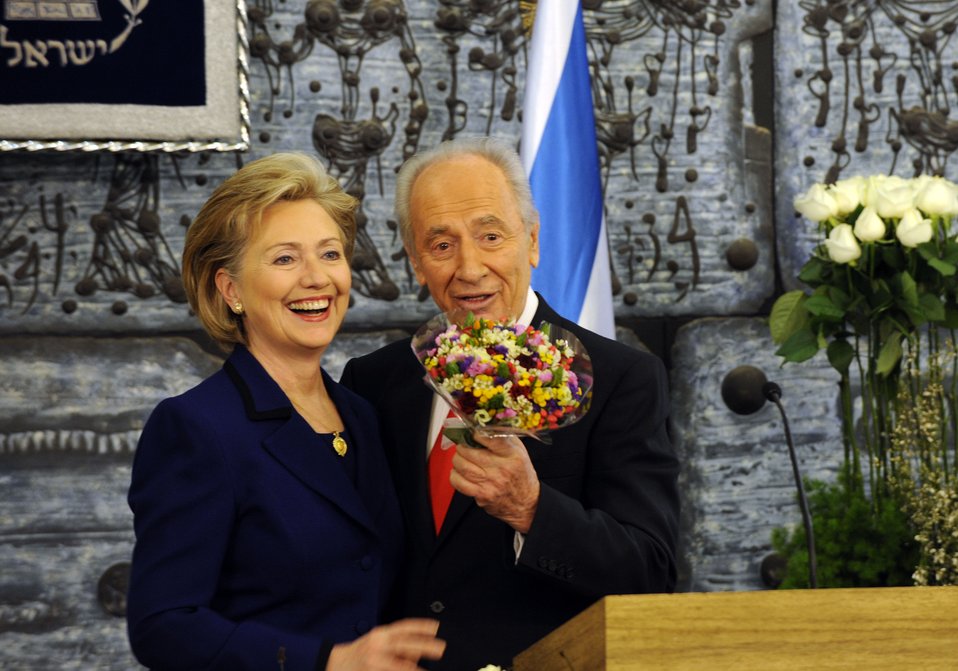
Secretary Clinton With President of Israel

U.S. Secretary of State Hillary Rodham Clinton with the President of Israel, Shimon Peres, at the President's Residence, Jerusalem March 3, 2009.